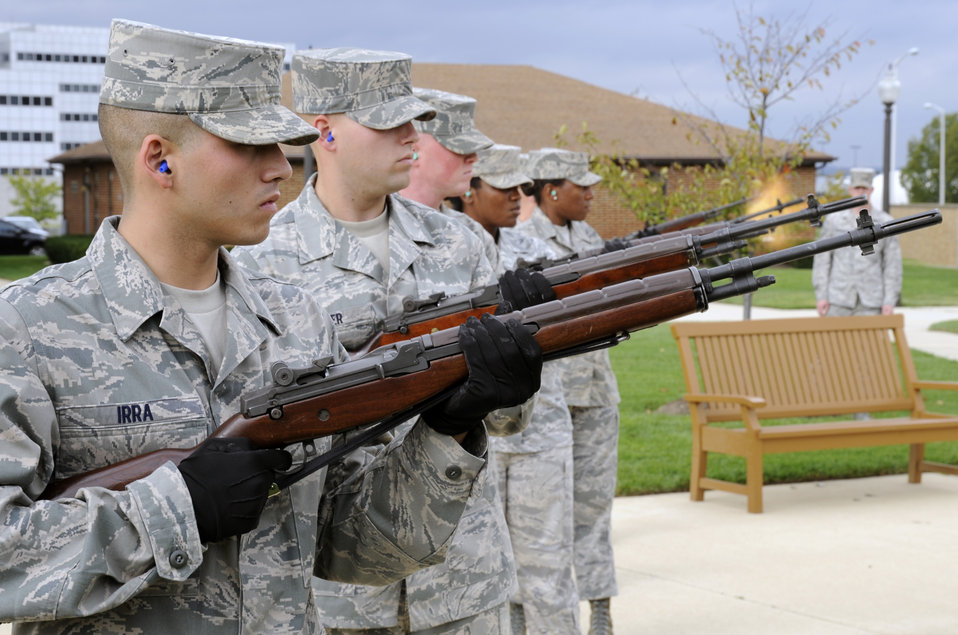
Honor Guard exhibits excellence, represents service

Members of the U. S. Air Force Honor Guard's firing party practice firing their rifles Oct. 25, 2010, at Bolling Air Force Base, D.C. The firing party conducts rifle volleys at funerals for veterans.